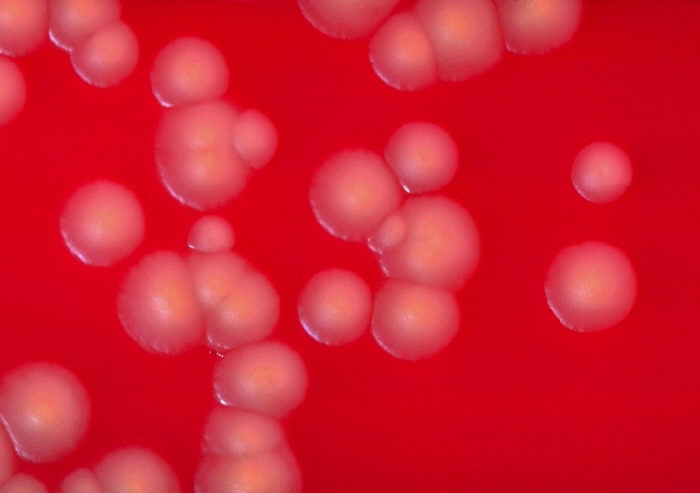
Blood agar plate culture of Flavobacterium odoratum.